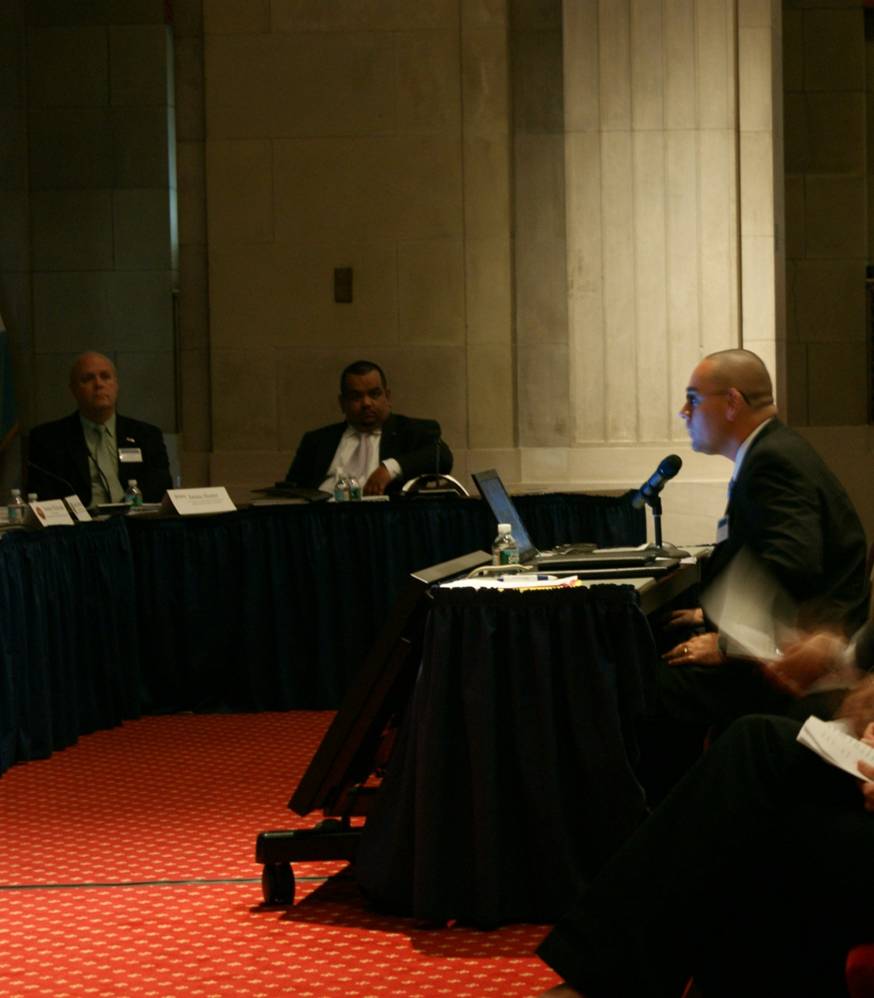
Coral Reef Task Force - Winter Meeting 2012